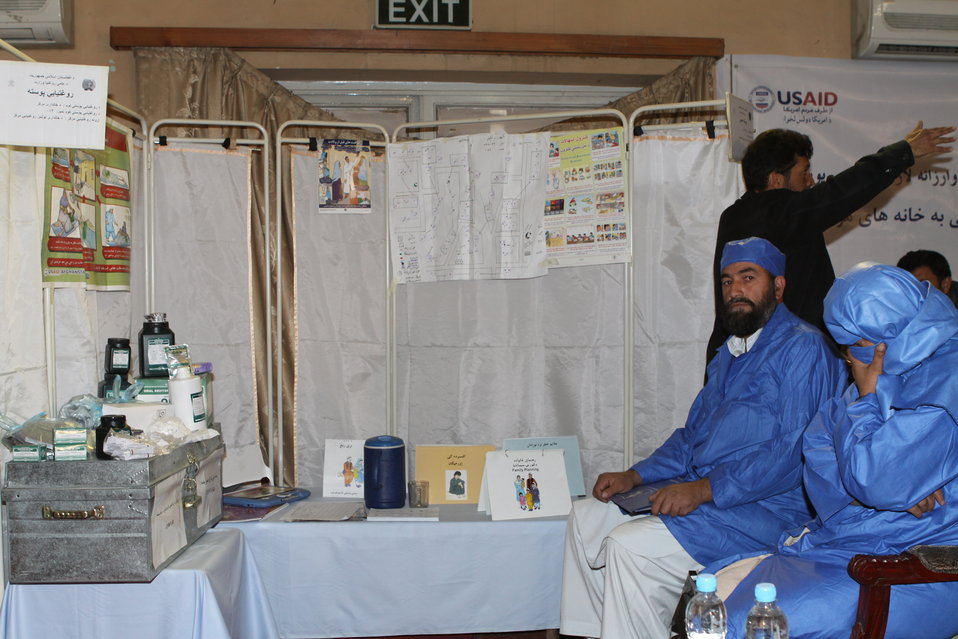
Community Health Workers Celebrated

Kabul, Afghanistan | December 5, 2010 — In support of the United Nations designated International Volunteer Day for Economic and Social Development, Afghanistan’s Ministry of Public Health celebrated its annual Community Health Worker Day today. Acting Minister of Public Health Dr. Suraya Dalil, USAID Senior Deputy Mission Director Robert Hellyer, other government officials, and international donors joined in recognizing the critical contribution of community health workers in Afghanistan and encouraging them to continue their voluntary support to their communities.
The event praised the contributions of the more than 22,000 volunteers throughout the country who deliver community level health-education, counseling, and services out of village health posts located in private homes. The Ministry of Public Health envisioned that community-based healthcare programs will actively encourage communities and families to adopt healthy lifestyles and behaviors, and provide families access to high quality and socially acceptable preventative medicine and life-saving services.
“We have 22,000 community health workers in Afghanistan that are able to implement the basic and standard medicines. They all have been trained through a job description,” said Minister Dalil. Addressing the health workers, she added, “I am proud and feel powerful that I have people like you.”
USAID-funded health projects collaborate closely with the Ministry of Public Health to improve the health and nutritional status of Afghans, provide quality primary healthcare, and promote healthy behaviors at the community and household-levels. USAID supported the training of more than 9,000 of the volunteer community health workers currently working in Afghanistan.
“On behalf of the American people, I congratulate the Community Health Workers for their diligence to gain the skills and knowledge necessary to serve their communities in this important role,” said USAID Senior Deputy Mission Director Hellyer. “USAID strongly supports community based health care and believes that quality community-based health services are essential to reaching Afghanistan’s Millennium Development Goals.”
To support the Basic Package of Health Services, USAID assisted in developing the community health worker training manual, helped train community health worker supervisors and master-trainers, facilitated in-service training, and produced and developed reporting tools, job aids, and education materials.